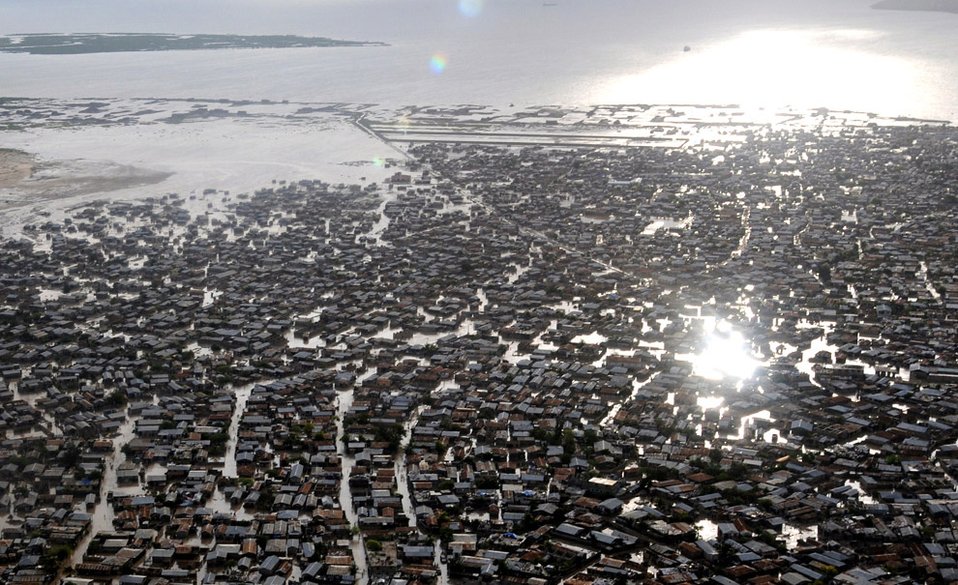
Continuing Promise

An aerial view of the devastation in Port de Paix after four storms in one month have devastated the island and killed more than 800 people. The amphibious assault ship USS Kearsarge has been diverted from the scheduled Continuing Promise 2008 humanitarian assistance deployment in the western Caribbean to conduct hurricane relief operations in Haiti.